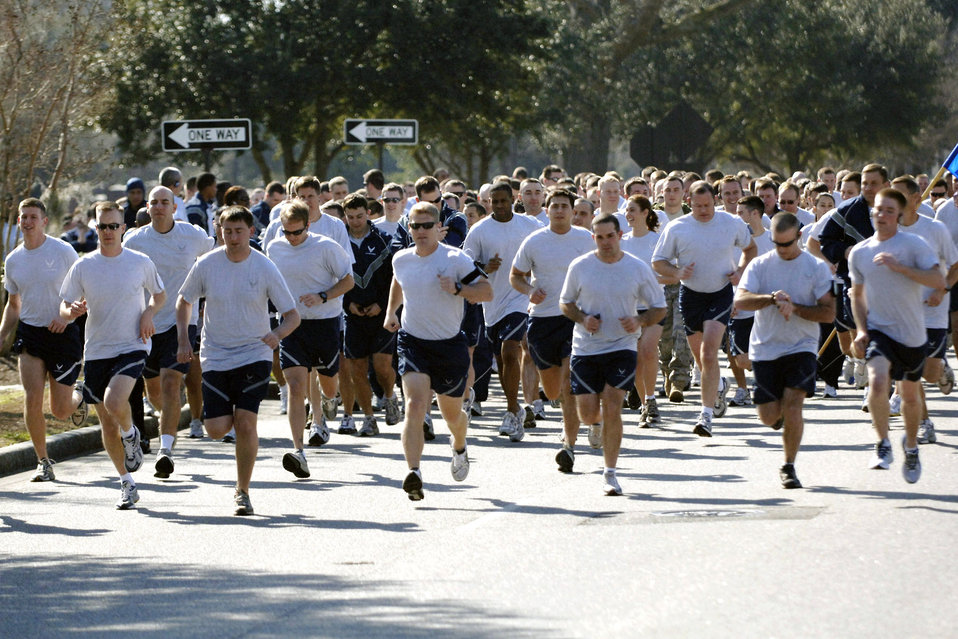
Air Force fitness program revision rewards excellent Airmen

Airmen who earn an